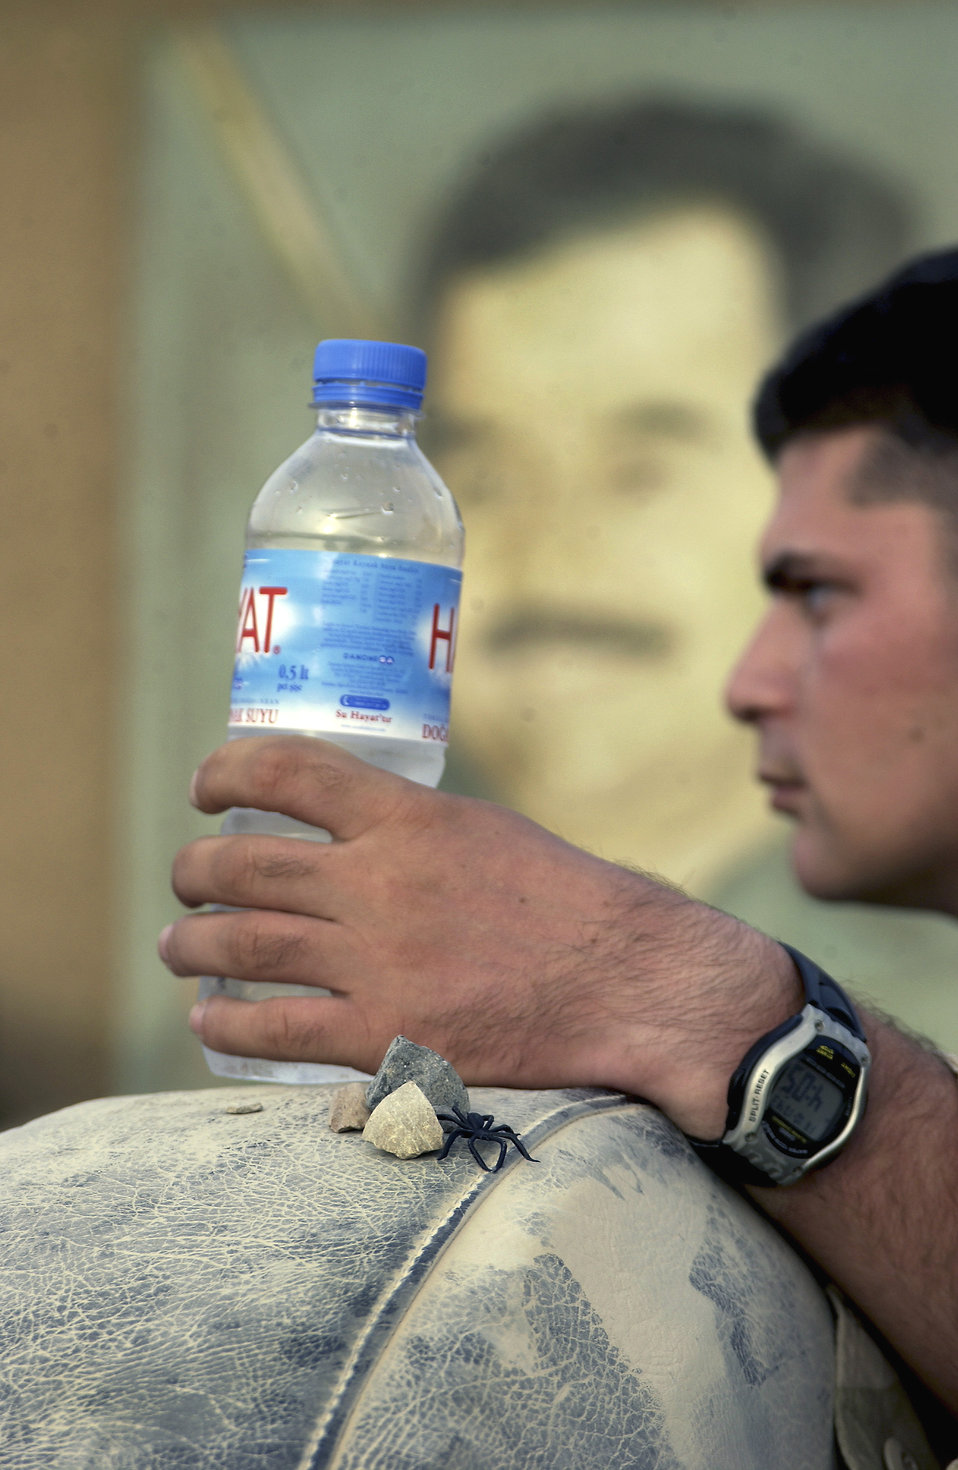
Itsy, bitsy spider

BAGHDAD INTERNATIONAL AIRPORT, Iraq -- A spider stalks unsuspecting Senior Airman Stephen Magaddino from the 728th Air Control Squadron at Camp Griffith here. Insects and snakes are among the many hazards that threaten the health of airmen deployed to this region supporting Operation Iraqi Freedom.